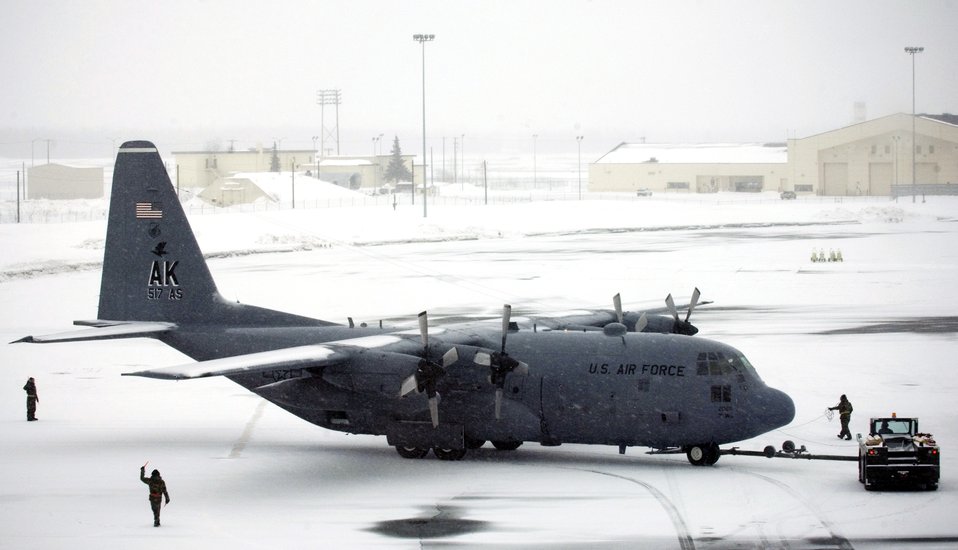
517th C-130 Final Flight

A snow-covered C-130 Hercules assigned to the 517th Airlift Squadron at Elmendorf Air Force Base, Alaska, is towed into place for post operational procedures March 23 following a shut-down ceremony. After 43 years of continuous service in Alaska, the ceremony marked the end of the C-130 era at the 517th. Airmen at Elmendorf soon will see C-17 Globemaster IIIs taking over the airlift mission.